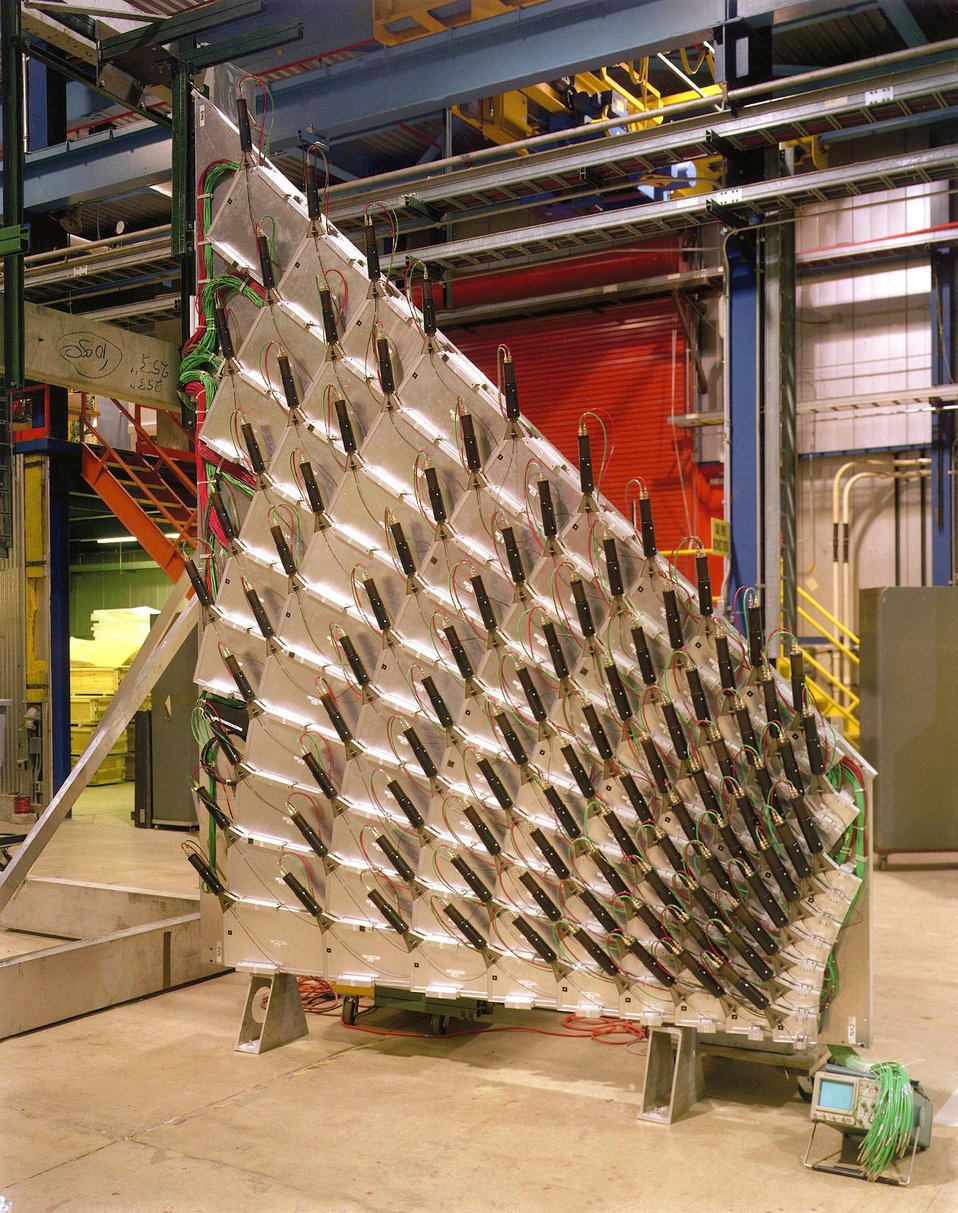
AN OCTANT OF MUON TRIGGER DETECTORS ASSEMBLED AND TESTED AT FERMILAB'S LAB F.

THE MUON SYSTEM OF TRIGGER DETECTORS TRACKS AND MEASURES THE BEHAVIOR OF MUONS IN A PARTICLE PHYSICS DETECTOR'S MAGNETIC FIELD. THE MUON, IS A SIGN OF AN UNUSUAL STATE OF MATTER PRODUCED IN THE PRIMARY PROTON-ANTIPROTON COLLISION INSIDE THE DZERO DETECTOR. IT IS AN IMPORTANT TAG USED BY PHYSICISTS IN TRACING DECAY PROCESSES BACK TO THEIR ORIGINS, WHICH COULD INCLUDE NEW DISCOVERIES BY THE COLLIDER RUN II OF THE TEVATRON.